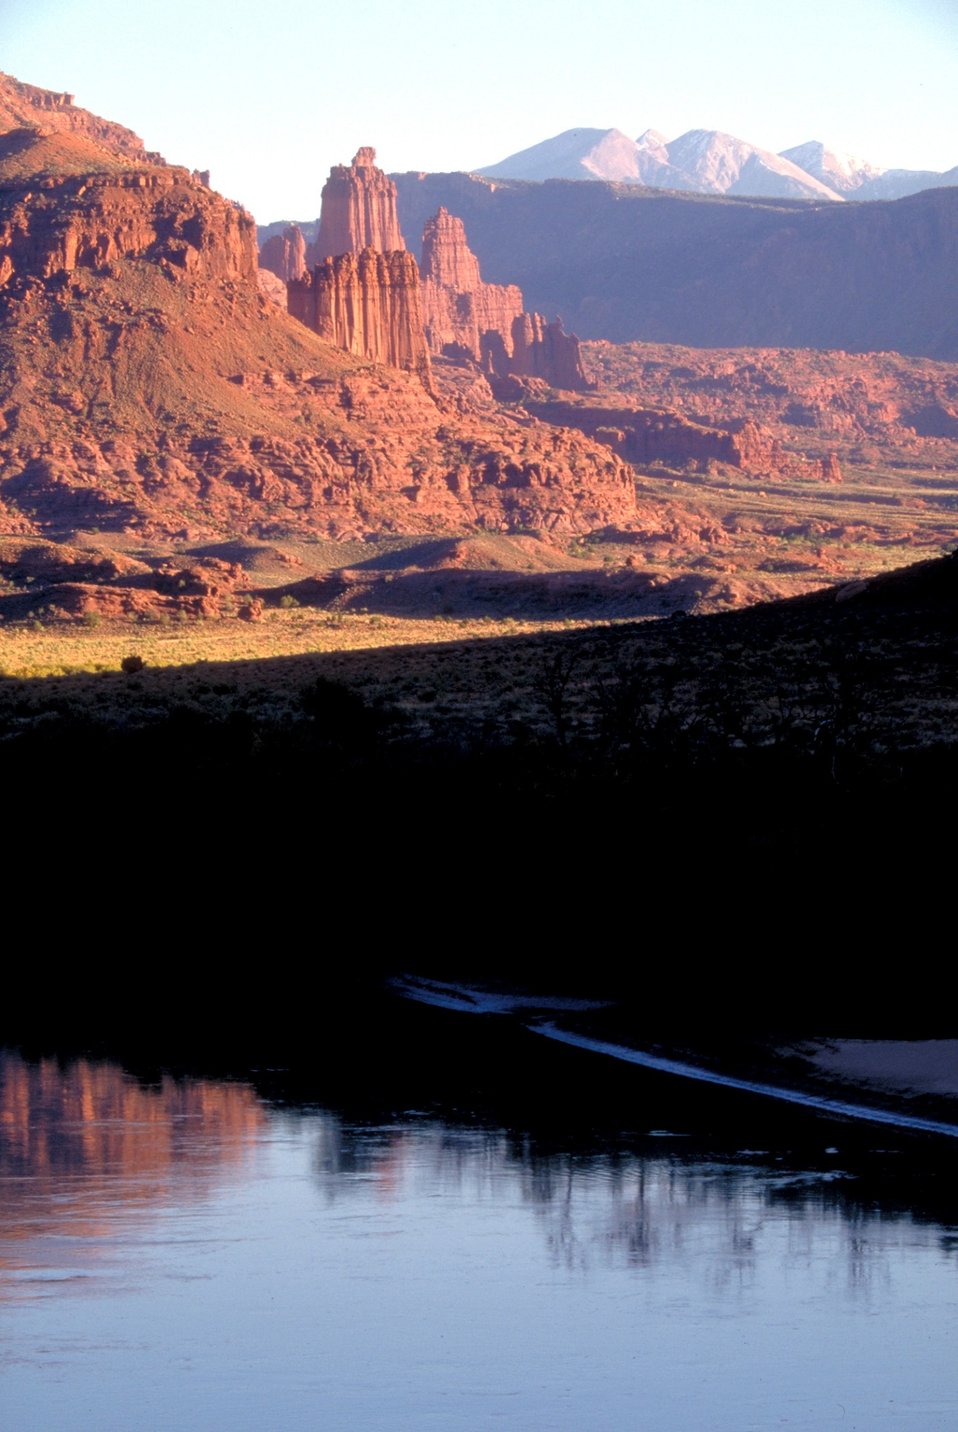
Fisher Towers along Highway 128, near Moab, Utah.